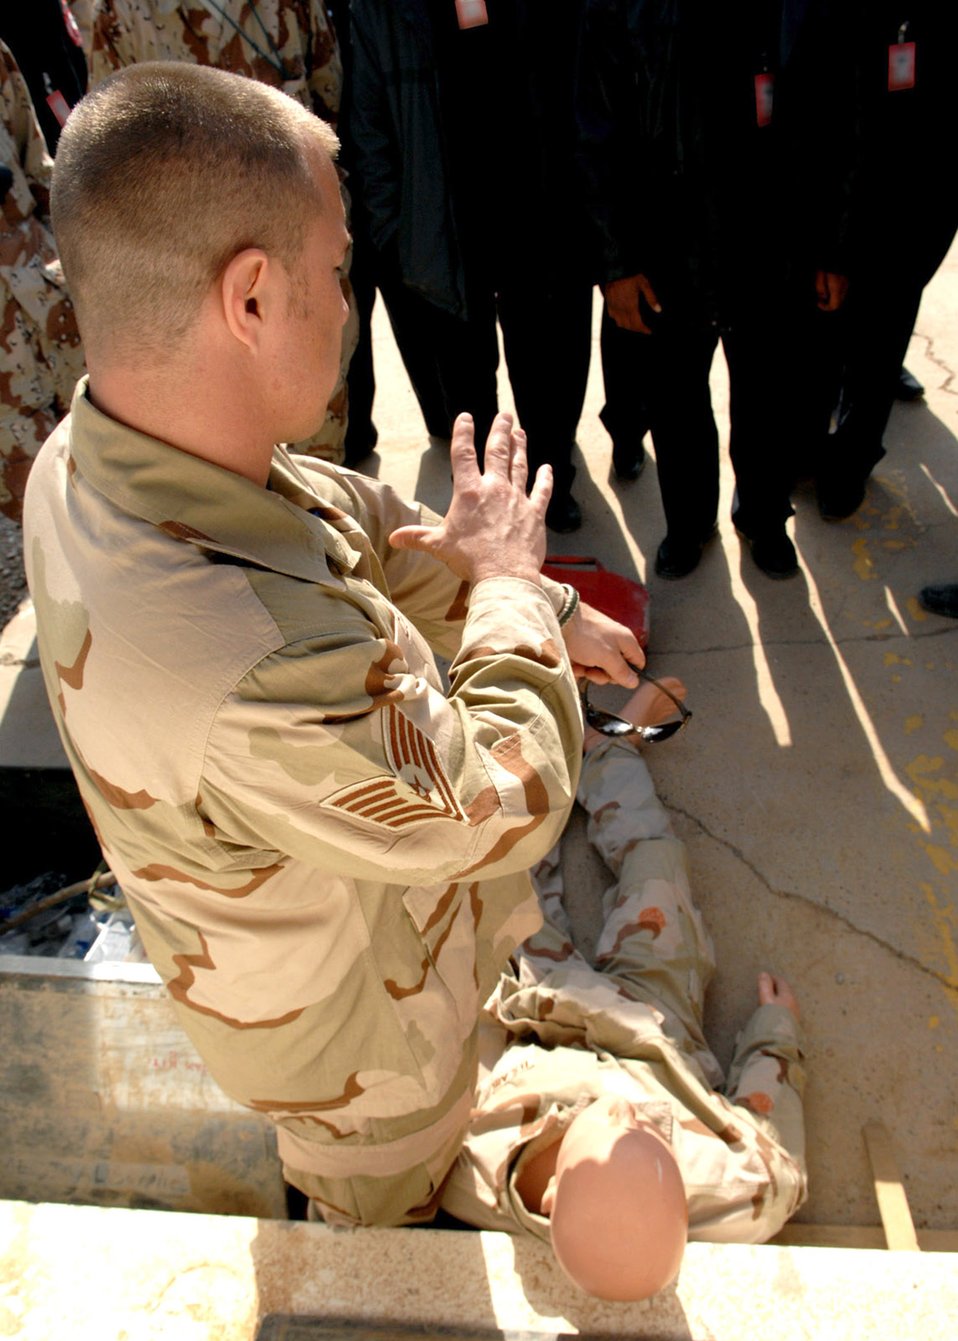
Airmen train Iraqi firefighters for improved regional safety

Tech. Sgt. Chancey Cruger gives instruction on first aid to Iraqi firefighters Feb. 27 at Kirkuk Air Base, Iraq. The course is part of an ongoing program to help Kirkuk improve fire response efforts. Sergeant Cruger is a 506th Expeditionary Civil Engineer Squadron firefighter.